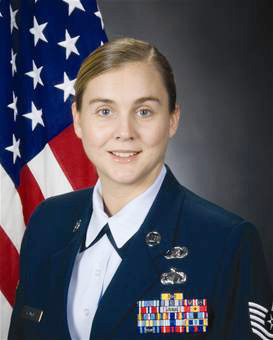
12 Outstanding Airmen of the Year named

Tech. Sgt. Jennifer Laufer, a chaplain assistant with the 42nd Air Base Wing at Maxwell AFB, Ala., was deployed to Kirkuk AB, Iraq, where she managed the chaplain facility. The Air Force Chief of Staff reviews the selections. The selections for the 2009 12 Outstanding Airmen of the Year were announced July 2 by Air Force officials at Randolph Air Force Base, Texas.